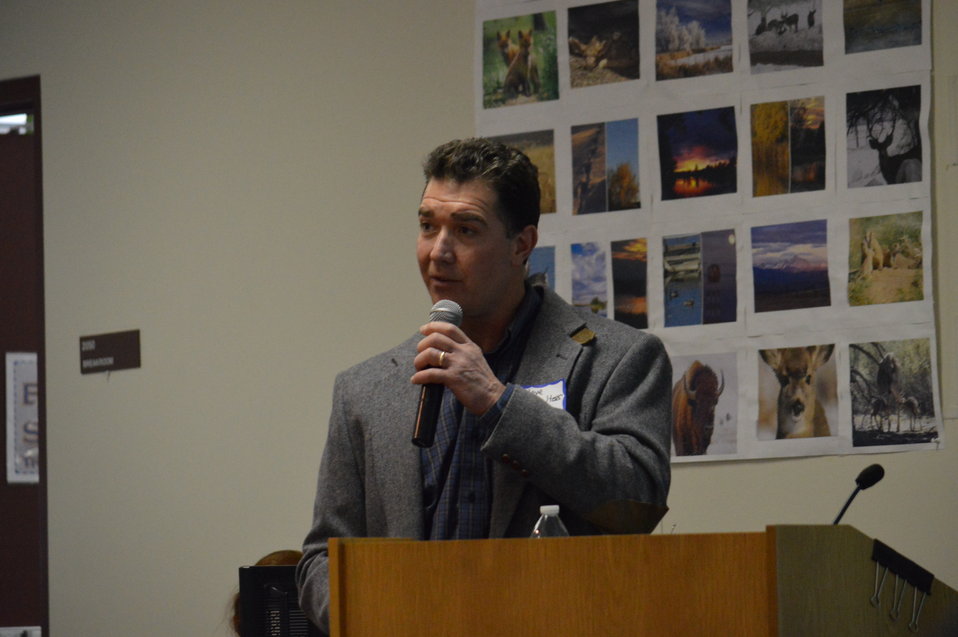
Eagle Summit III

Steve Oberholtzer starts the panel discussion at the Eagle Summit III in Denver, Colorado on March 20, 2014 at the Rocky Mountain Arsenal National Wildlife Refuge.